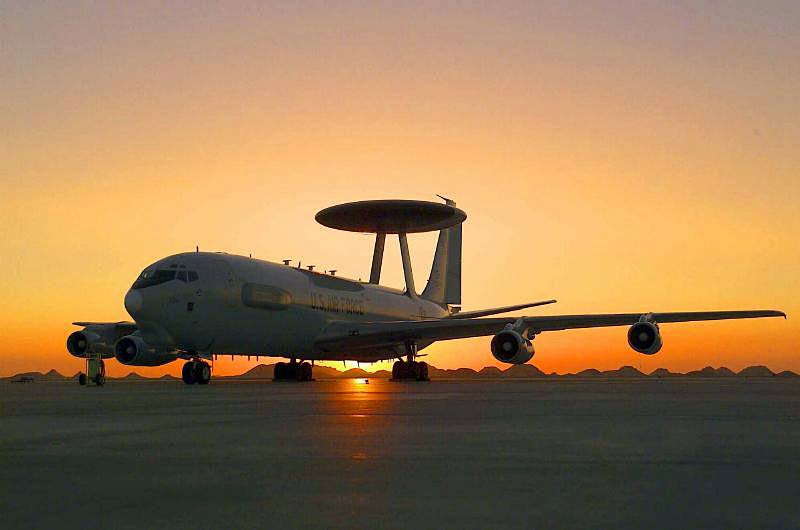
AWACS

OPERATION IRAQI FREEDOM -- About 45 people deployed from Tinker Air Force Base, Okla., are working together at a forward-deployed location to ensure the E-3 Sentry, better known as the Airborne Warning and Control System aircraft or AWACS, is ready to launch within an hour if needed.